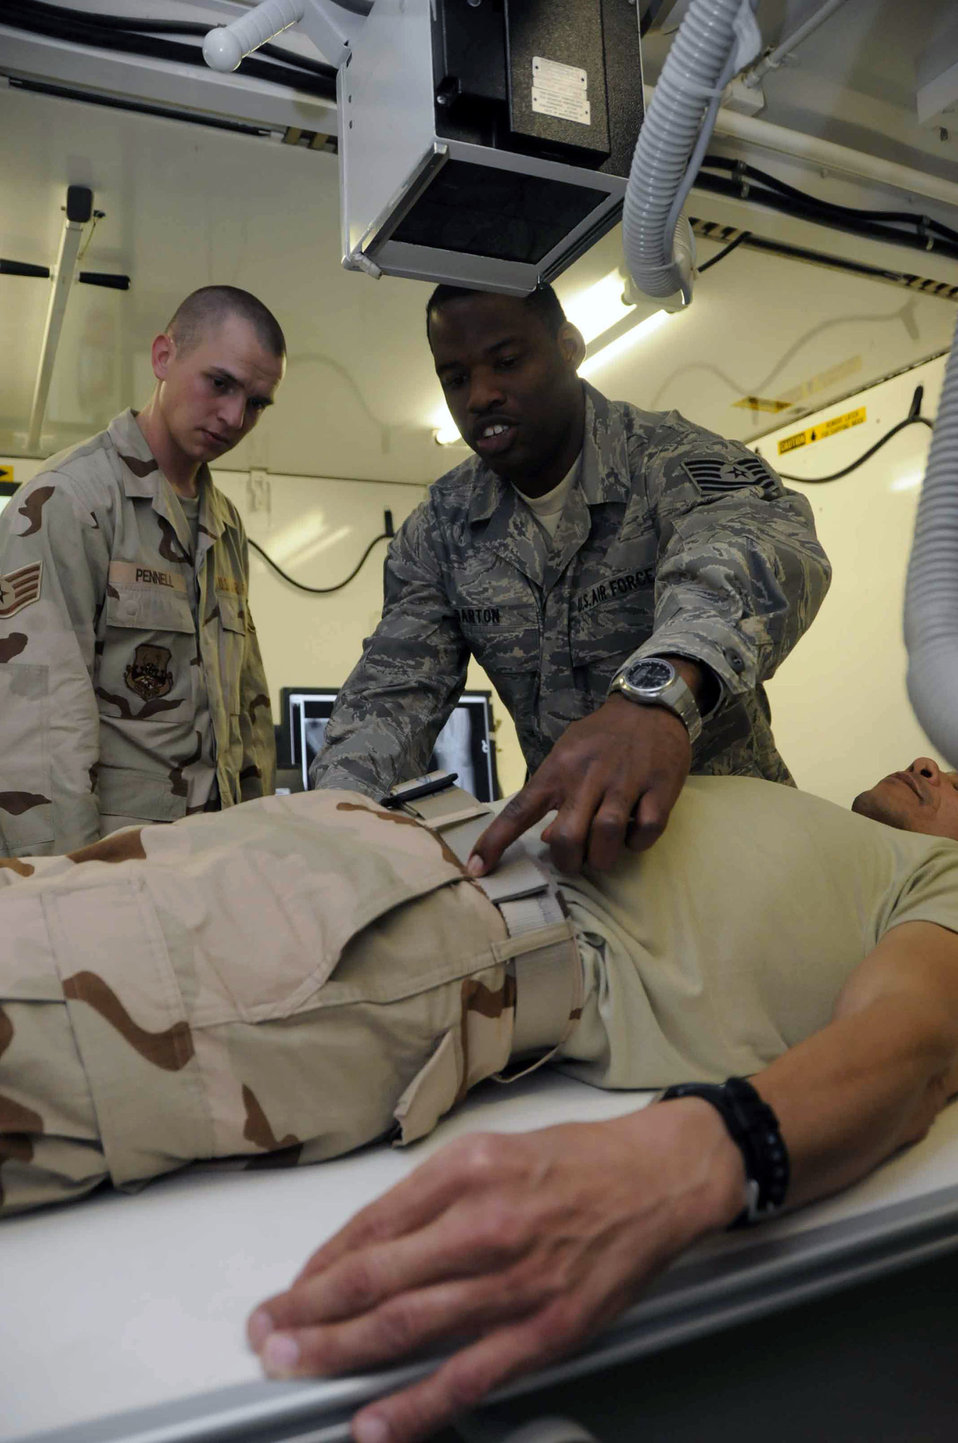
Program helps deployed Airmen with career decisions

Master Sgt. Will Brown shows Staff Sgt. Enzzo Ferrari some of the tasks of a C-17 Globemaster III loadmaster June 24 in Southwest Asia. The two are participating in a mentor/shadow program designed to help younger Airmen who are deployed make major career decisions while far away from career advisors and other personnel specifically trained to help in those areas. Sergeant Ferrari is interested in cross-training from the 379th Expeditionary Operations Support Squadron. Sergeant Brown is a member of the 816th Expeditionary Airlift Squadron.